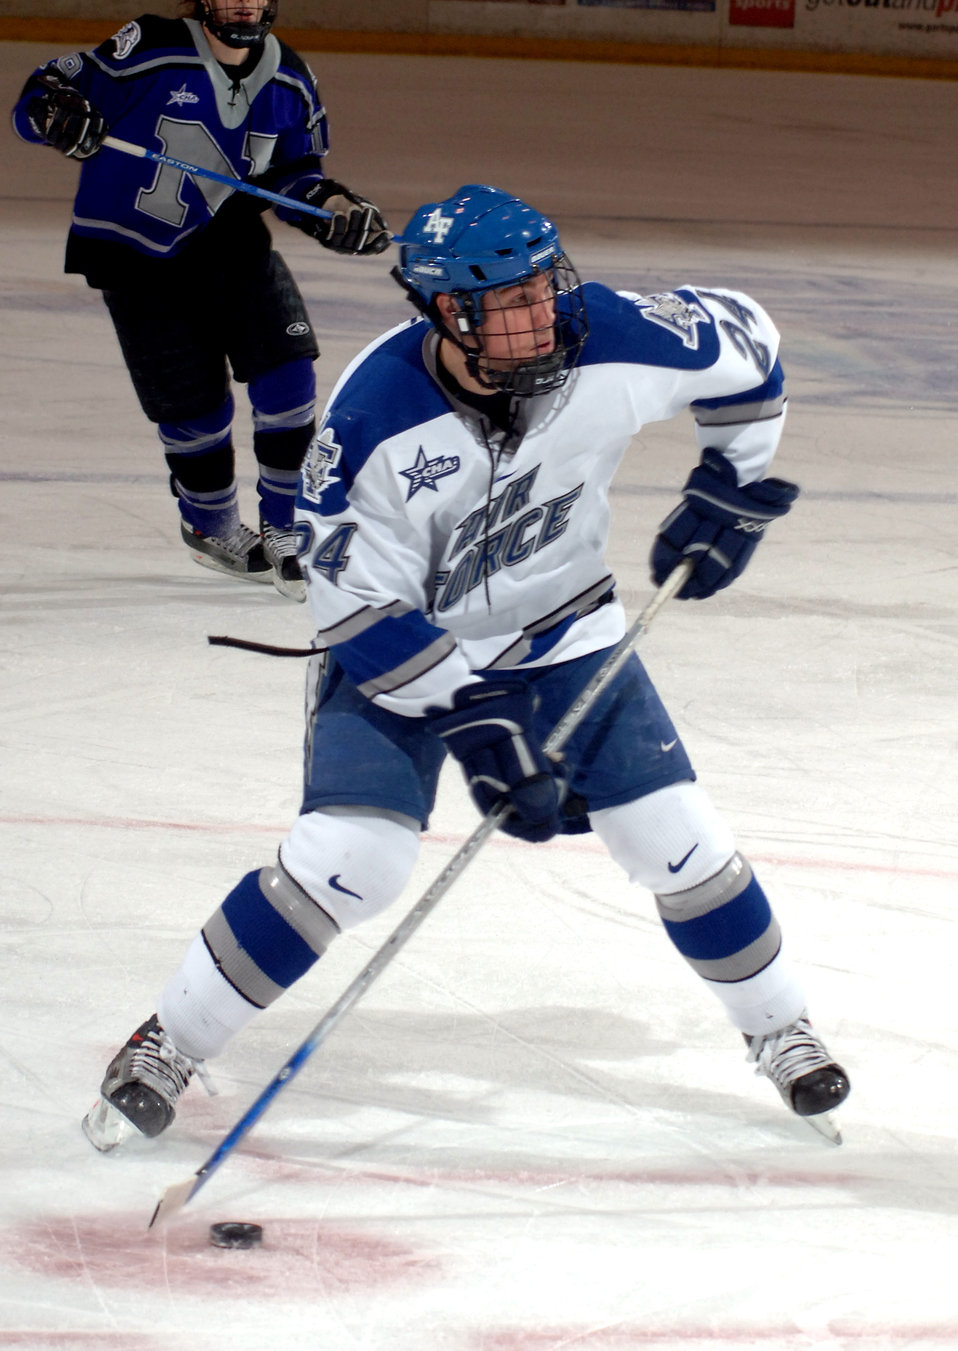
Hockey: Academy player finalists for national hockey award

U.S. Air Force Academy Eric Ehn finished the season second in the nation in scoring with 1.6 points per game. The junior center is one of three finalists for the Hobey Baker Memorial Award, college hockey's most prestigious individual honor.